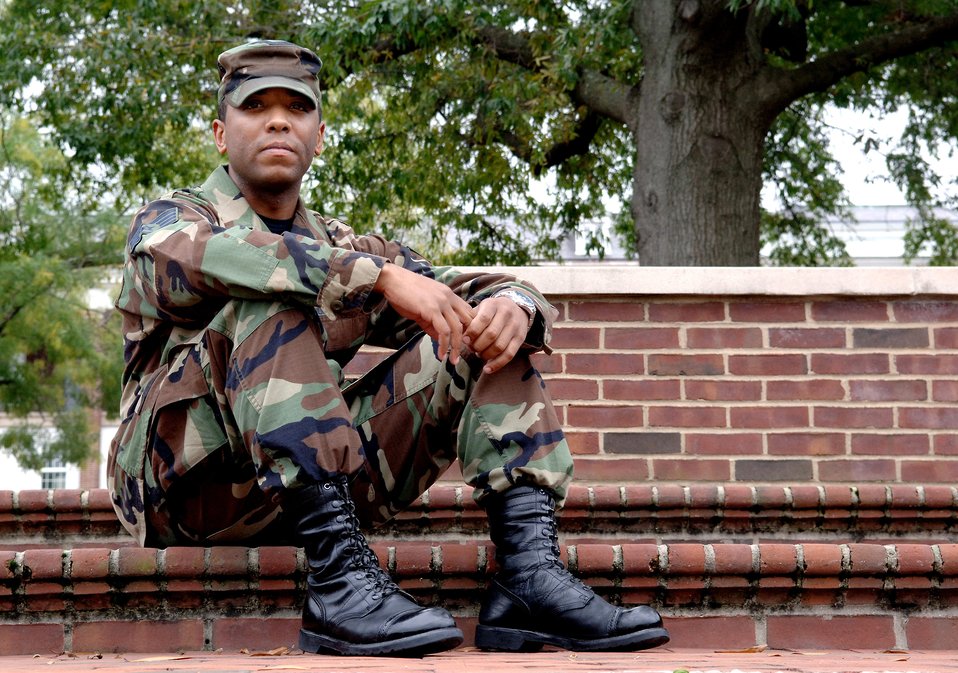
AF Memorial: Inspiration leads to future success

Staff Sgt. Paul Piper sits on some steps outside the wing headquaters builiding Oct. 11 at Bolling Air Force Base, Washington, D.C. Sergeant Piper is a command post controller with the Air Force District of Washington and is involved with the Air Force Memorial dedication ceremony Oct. 14 in Arlington, Va.